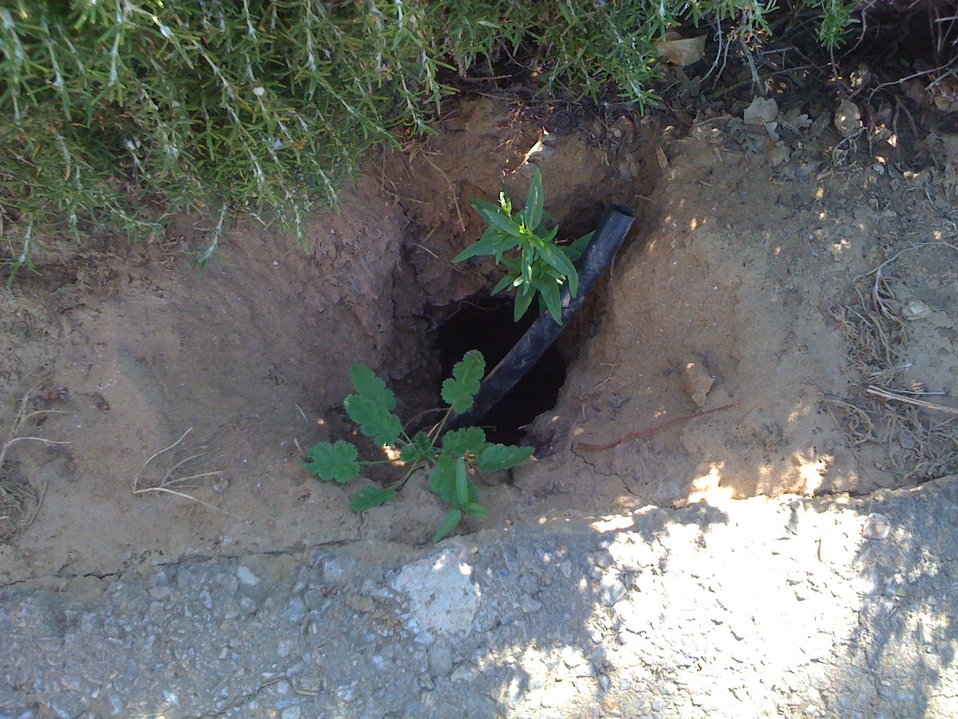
Leaking irrigation line creates hole in Elk Grove levee

A leaking irrigation system for landscaping trees planted on the Laguna West levee in Elk Grove, Calif., creates a hole in the levee, identified during a U.S. Army Corps of Engineers levee inspection July 29, 2009. The U.S. Army Corps of Engineers inspects levees in its Rehabilitation and Inspection Program to ensure levees don’t pose an unacceptable risk to lives, and to provide levee managers and residents with detailed information on the condition of levees to help them make informed decisions about safety.